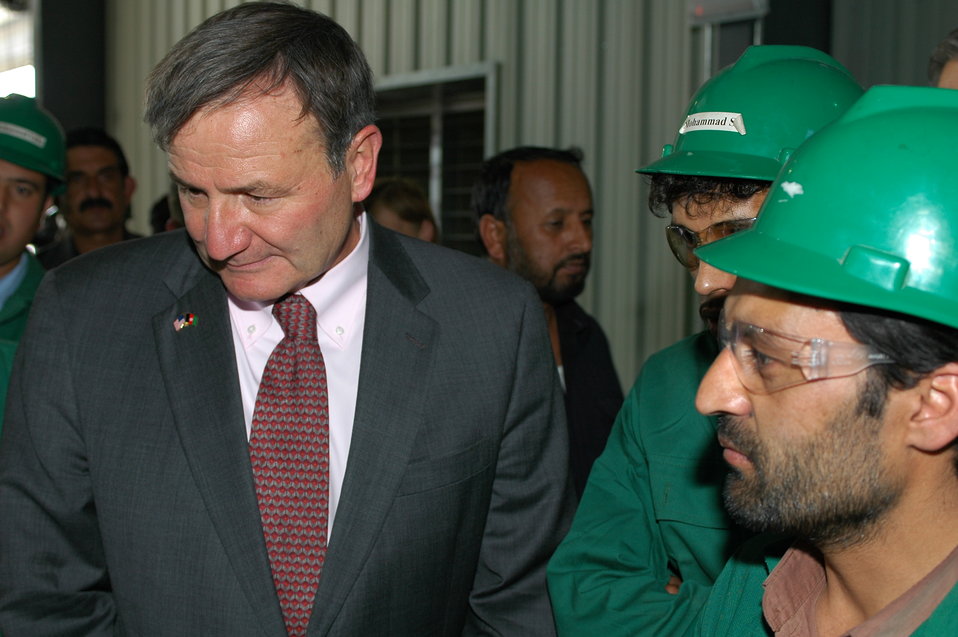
105 MW Tarakhil Power Plant Handover